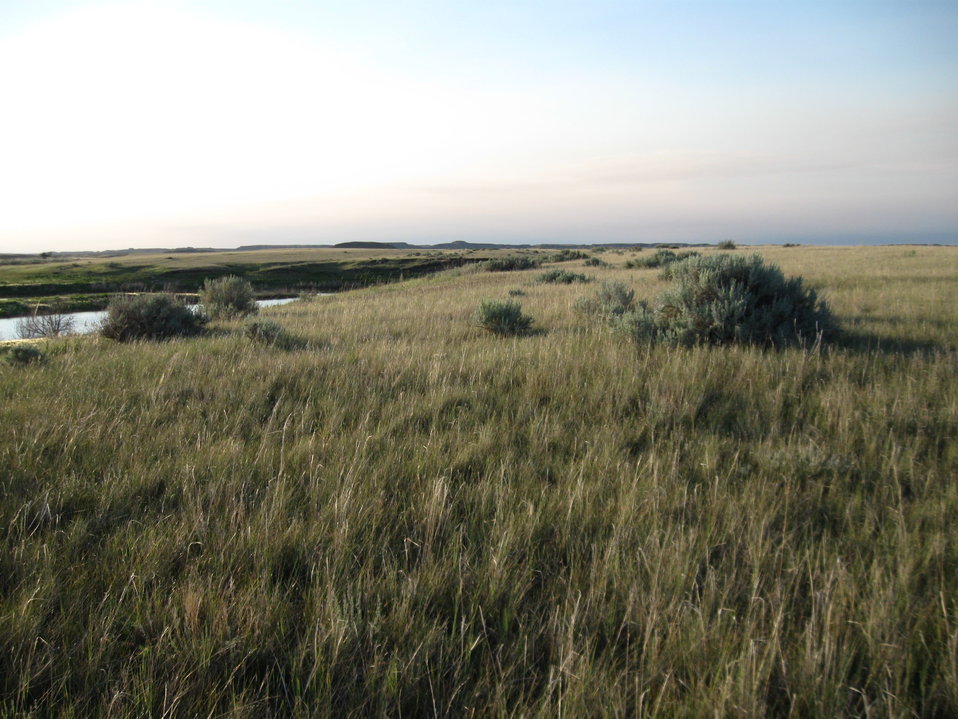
Dry Arm

Early morning on the east side of CMR near Fort Peck Lake.